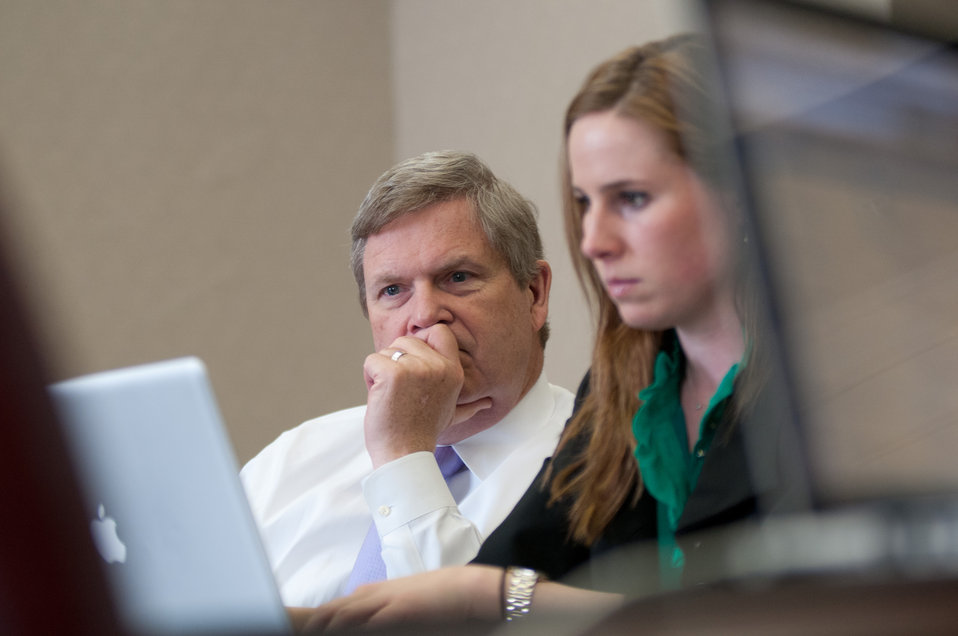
Agriculture Secretary Tom Vilsack responds to questions, with the assistance of Office of Communications Director of Web Communications Amanda Eamich, during the first Virtual Office hours live 'Twitter' session held at the U.S. Department of Agriculture in Washington, D.C., on Thursday, April 4, 2012.